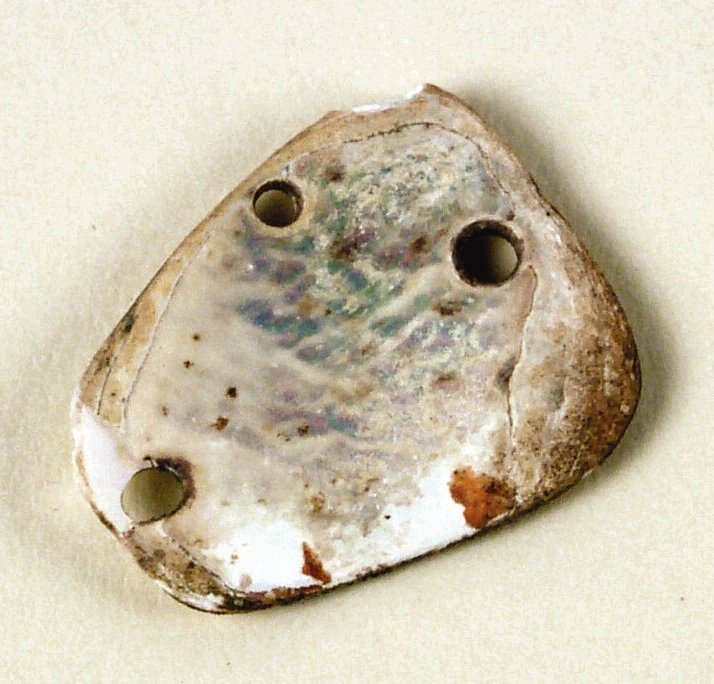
Abalone pendant, 25.4 mm